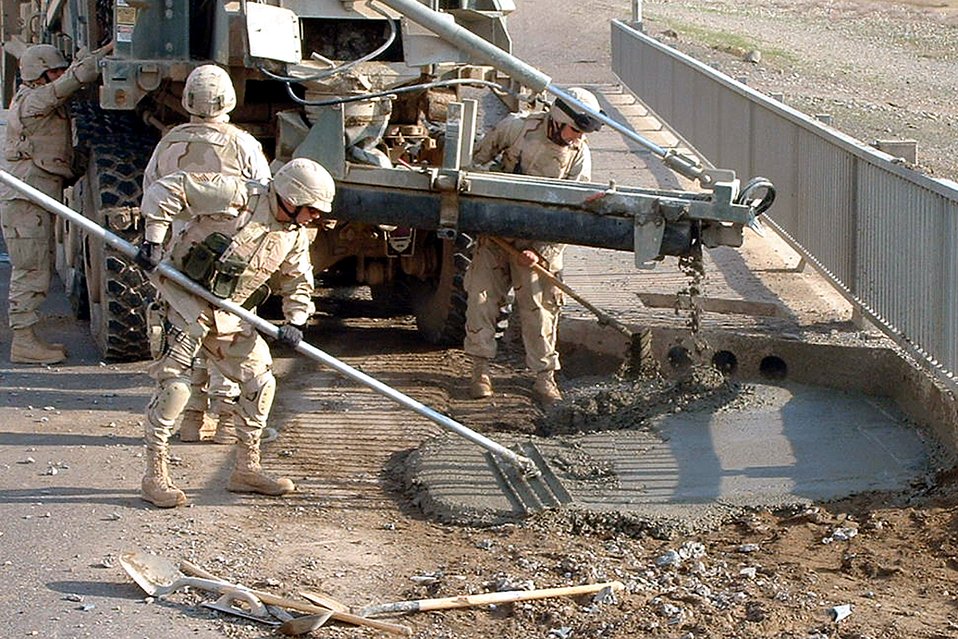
Combat Airmen keep convoy routes open

Airmen fill in a crater caused by an improvised explosive device on July 17 in Iraq. Members of the 732nd Expeditionary Civil Engineer Squadron's Detachment 10 are frequently called upon to repair damage to convoy routes caused by IEDs.